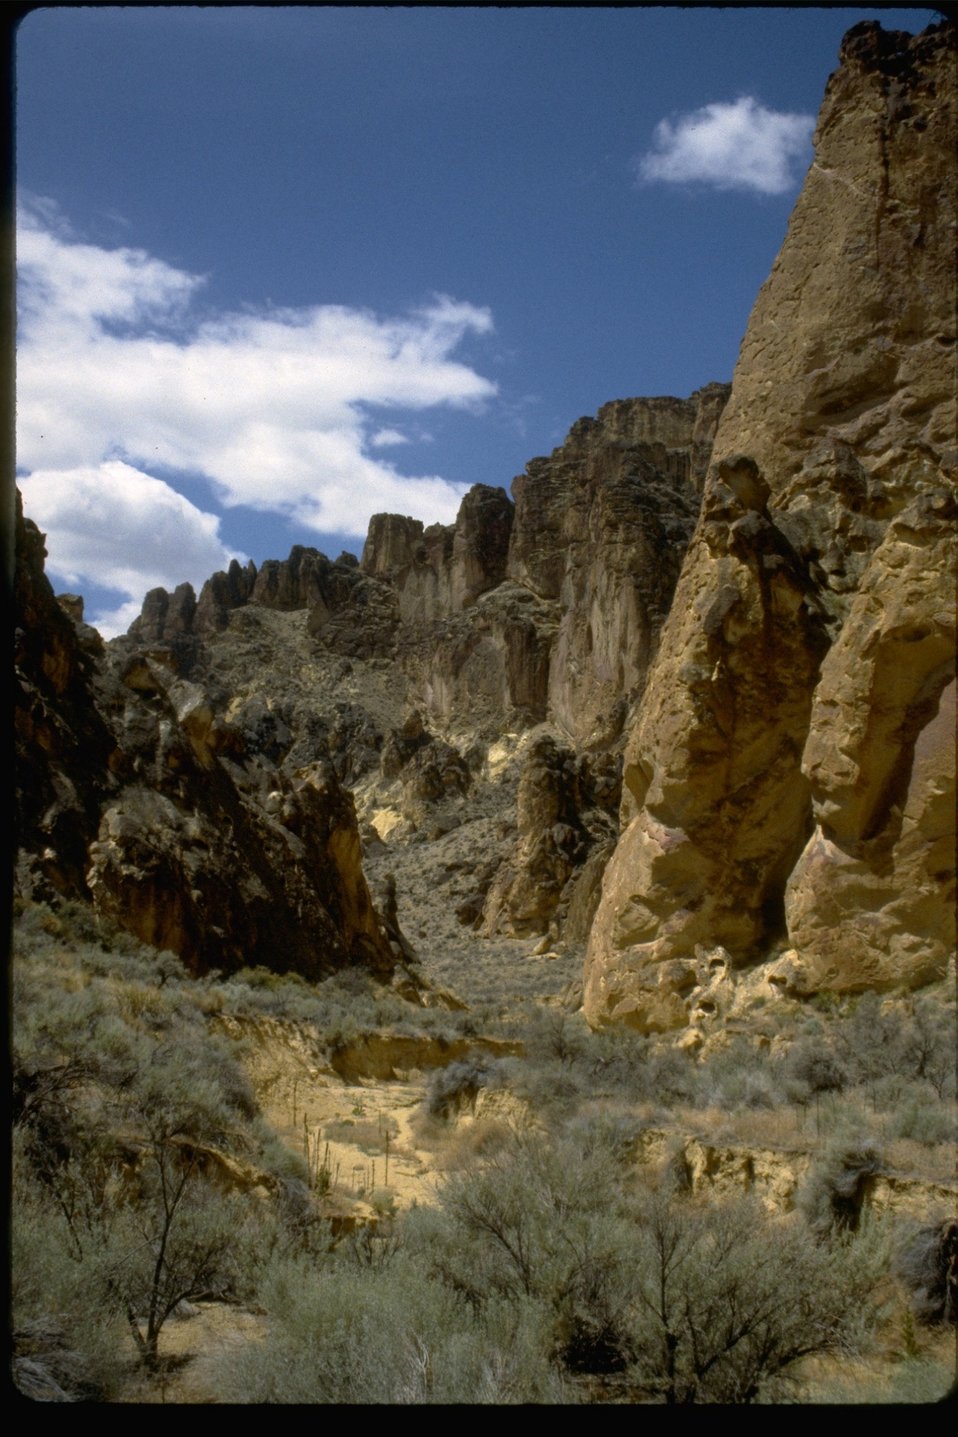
The steep rocky cliffs at the Honeycombs Wilderness Study Area. OR 3-77A.